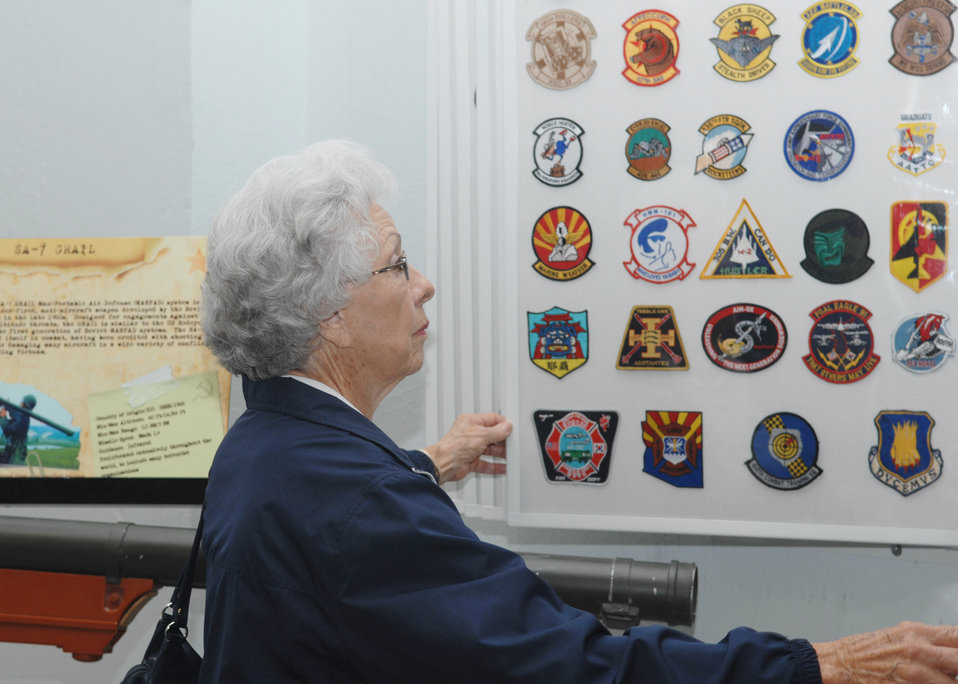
Past, present Shooters unite

Eileen Sanders, wife of retired Lt. Col. Elwood Sanders, flips through pages of unit patches at the Threat Training Facility, March 6, 2010, at Nellis Air Force Base, Nev.